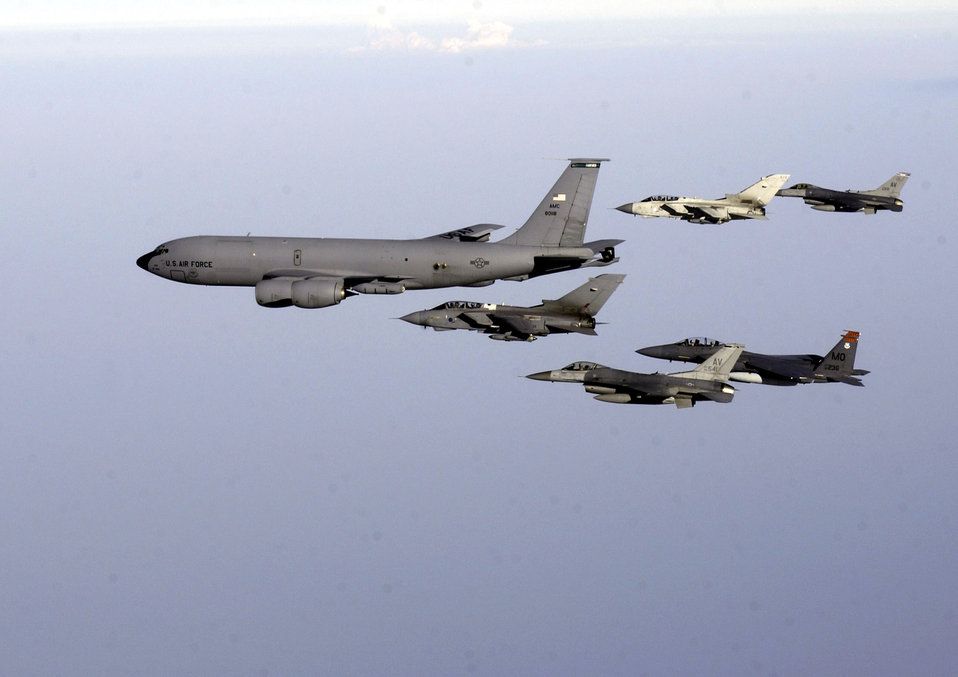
Formation flying

OVER SOUTHWEST ASIA -- A KC-135 Stratotanker leads a formation of an F-15 Strike Eagle, two F-16 Fighting Falcons and two British GR4 Tornados on Dec. 29. The aircraft and crews are supporting operations here.